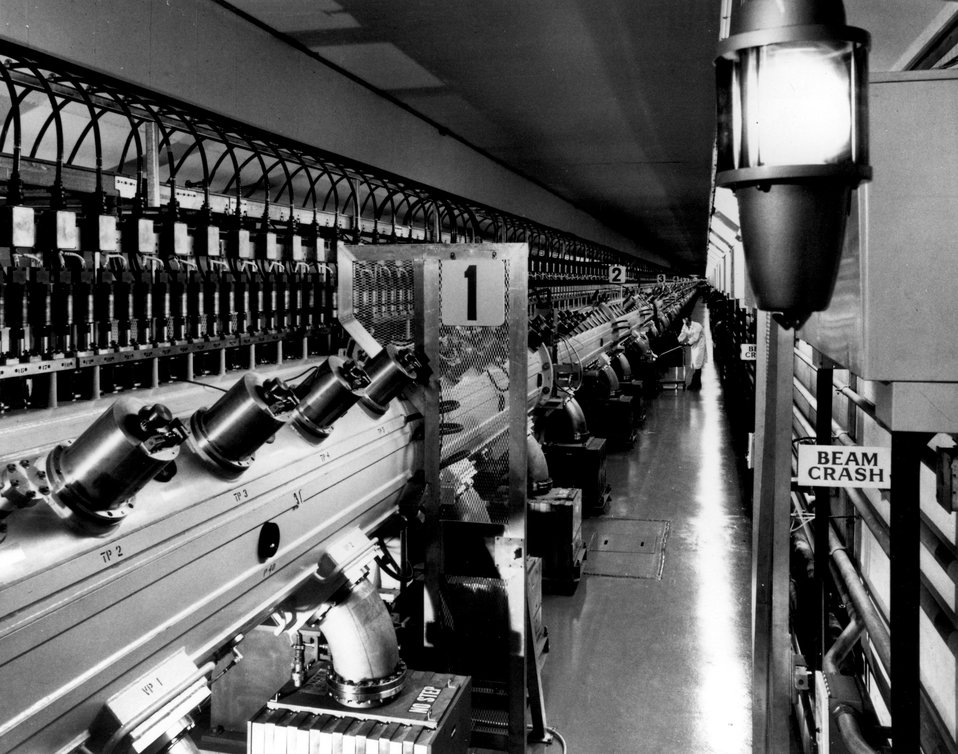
The 200 MeV linear accelerator at the U.S. Atomic Energy Commission's Brookhaven National Laboratory injects protons into the Alternating Gradient Synchrotron which accelerates them to 33 BeV. c. 1972